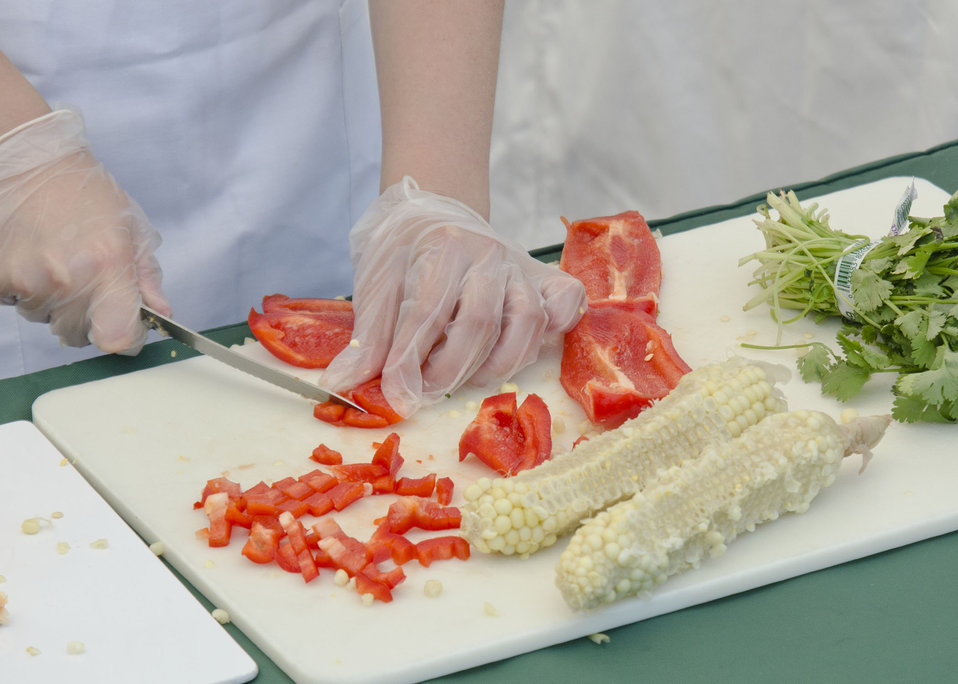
Kid Chef Lily Gravitz, 12, prepares Mexican inspired corn salad during her cooking demonstration at the U.S. Department of Agriculture Farmers Market, located in Washington, DC, Friday, July 1, 2011.